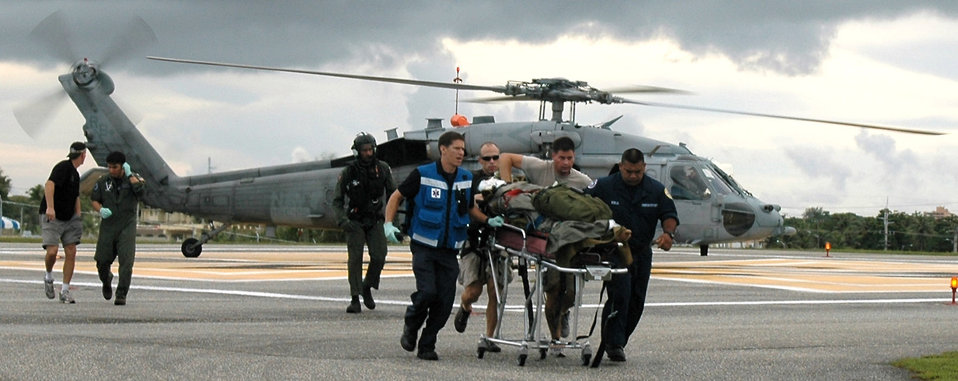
PJs recall recent rescue mission

Airmen from the 31st Rescue Squadron at Kadena Air Base, Japan, and other medical personnel offload an injured mariner from a Navy helicopter in Guam Sept. 25. The mariner was rescued from a Panamanian freighter about 750 miles north of Saipan.